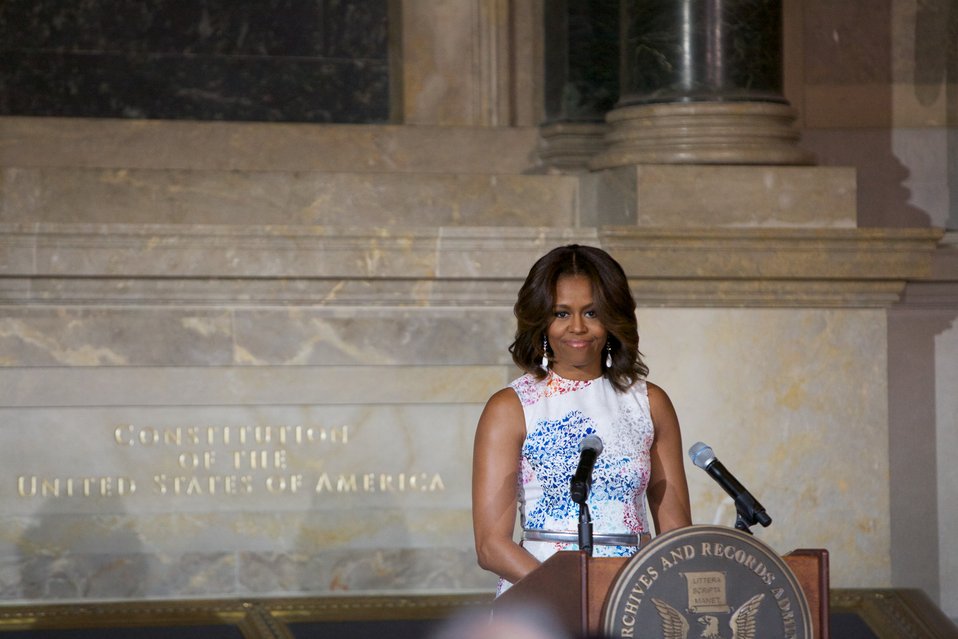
Naturalization Ceremony with Michelle Obama